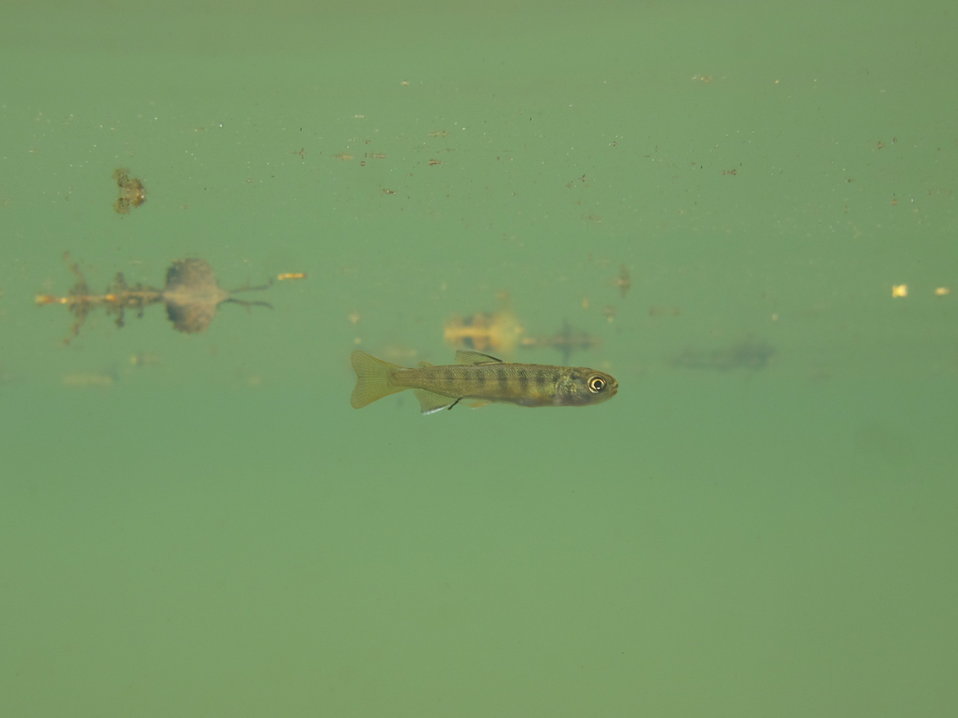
Juvenile coho salmon

taking advantage of restored habitat in Wasilla Creek (Mat-Su Valley, Alaska).